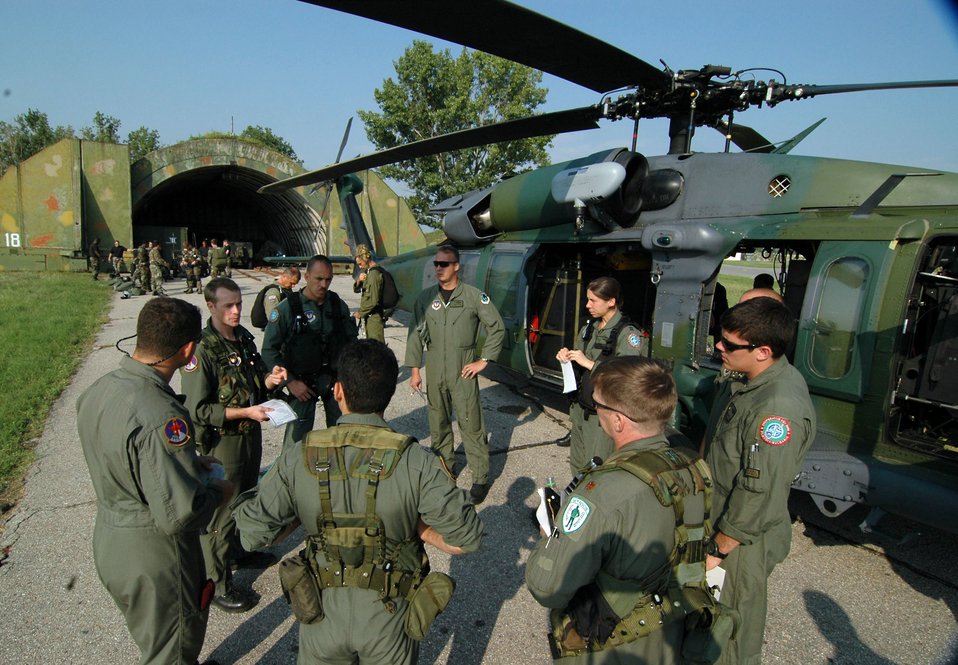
PLOVDIV, Bulgaria -- Capt. Matt Schexnyder briefs two crews before performing a parajump mission. He is one of about 50 56th Rescue Squadron Airmen from Naval Air Station Keflavik, Iceland, who are here for exercise Cooperative Key 05. He is an HH-60G Pave Hawk instructor pilot.